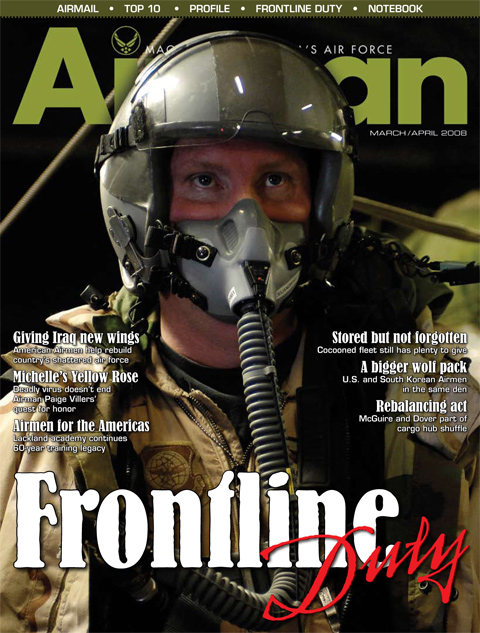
March-April Airman magazine now available

the March-April 2008 issue of Airman, now available in print and online at www.af.mil/news/airman.